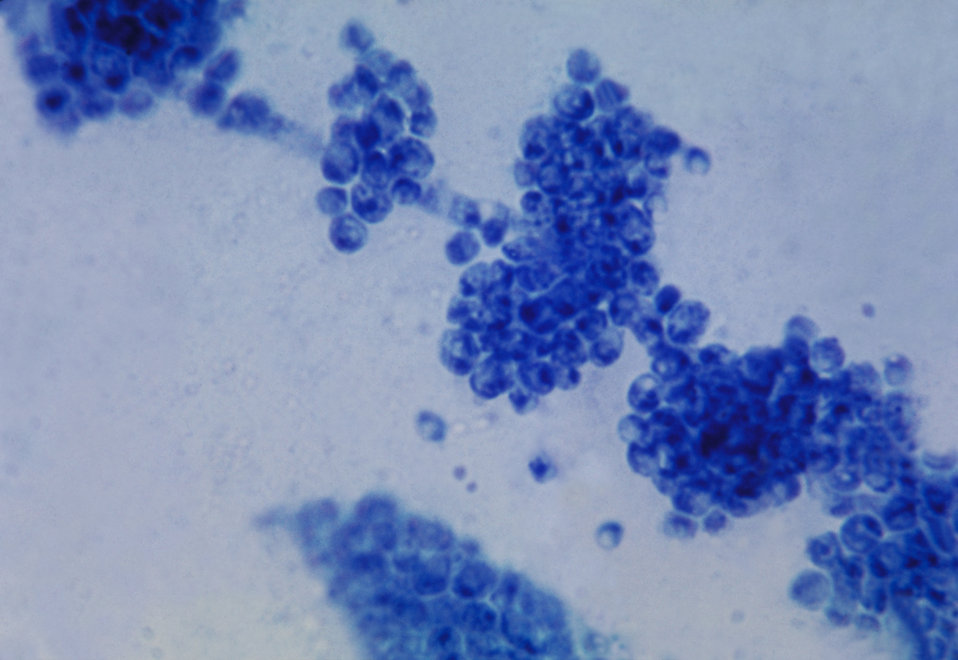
This is a photomicrograph of the fungus Candida albicans.